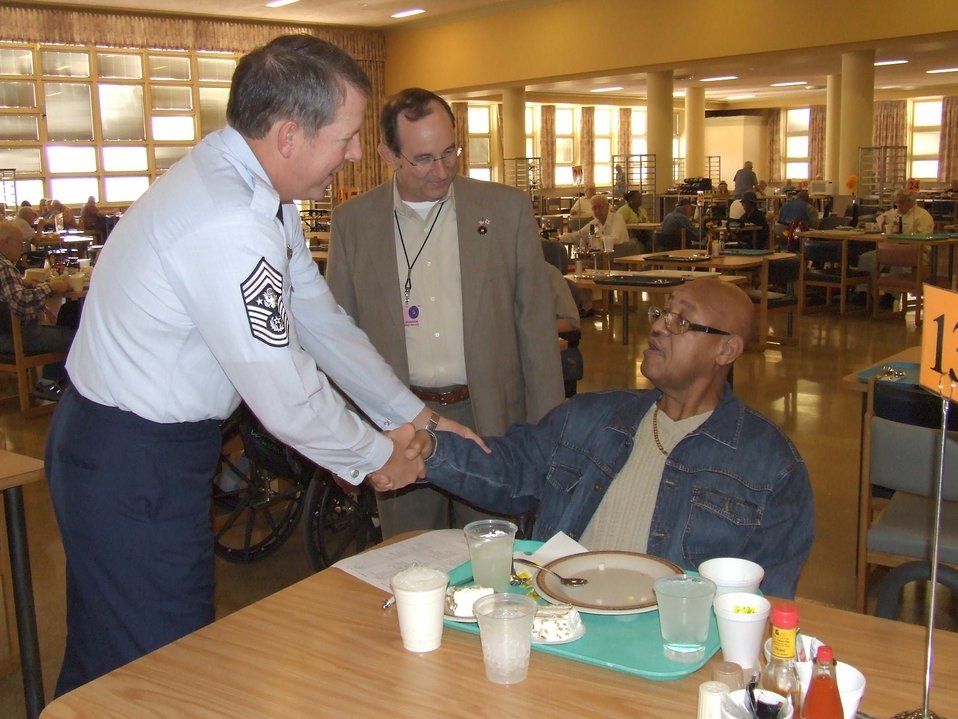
CMSAF visits Armed Forces Retirement Home

Chief Master Sgt. of the Air Force Rodney J. McKinley greets Army veteran Ronald Eskridge at the Armed Forces Retirement Home in Washington D.C. The chief and his entire staff visited the home Nov. 10 to honor the veterans there.